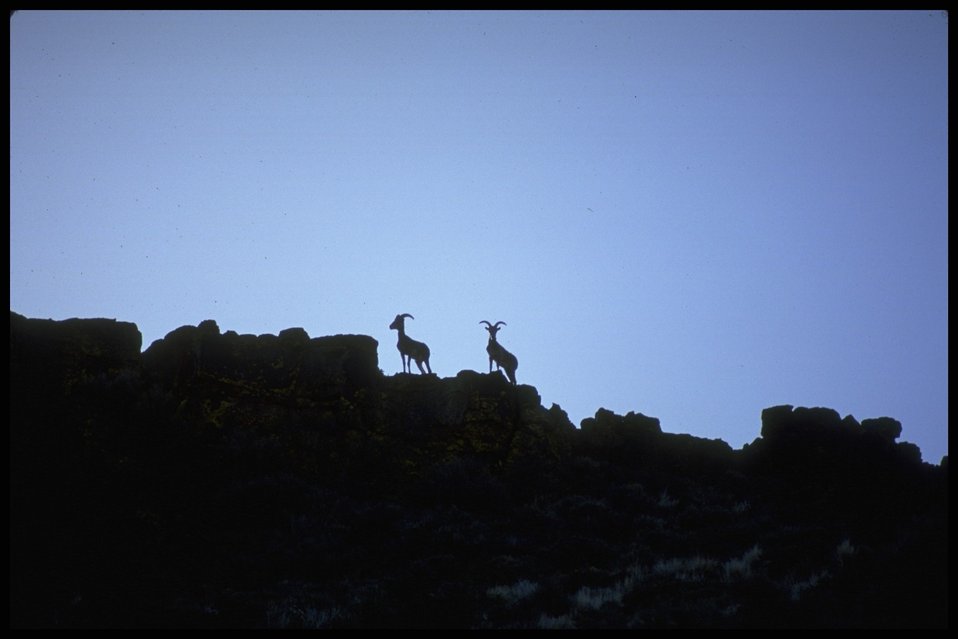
Big Horned Sheep, Lakeview District.